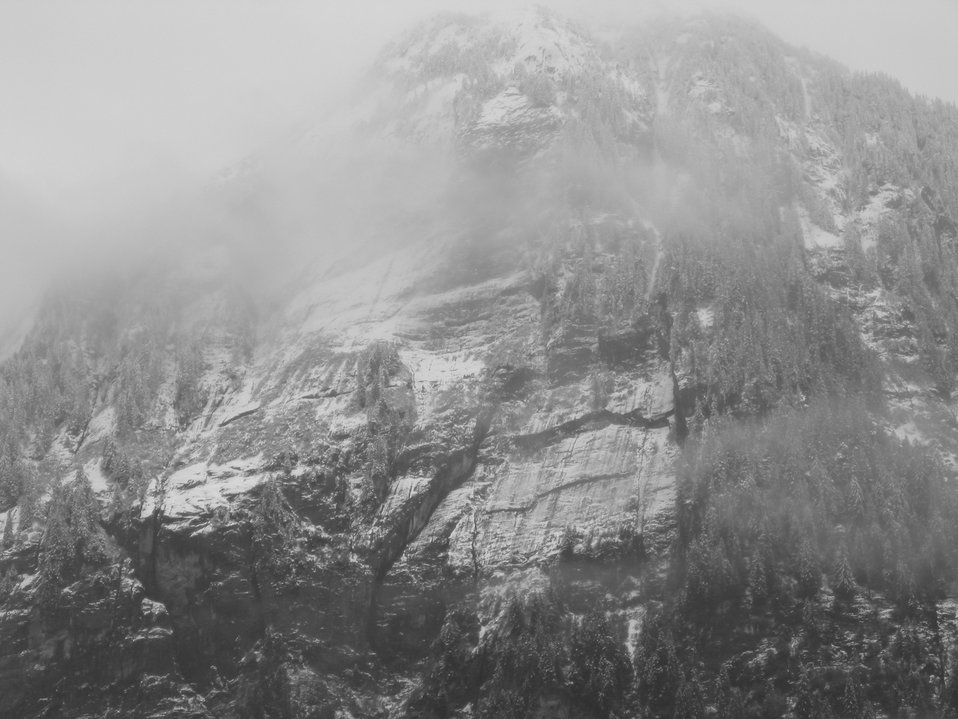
Fly-away setup.